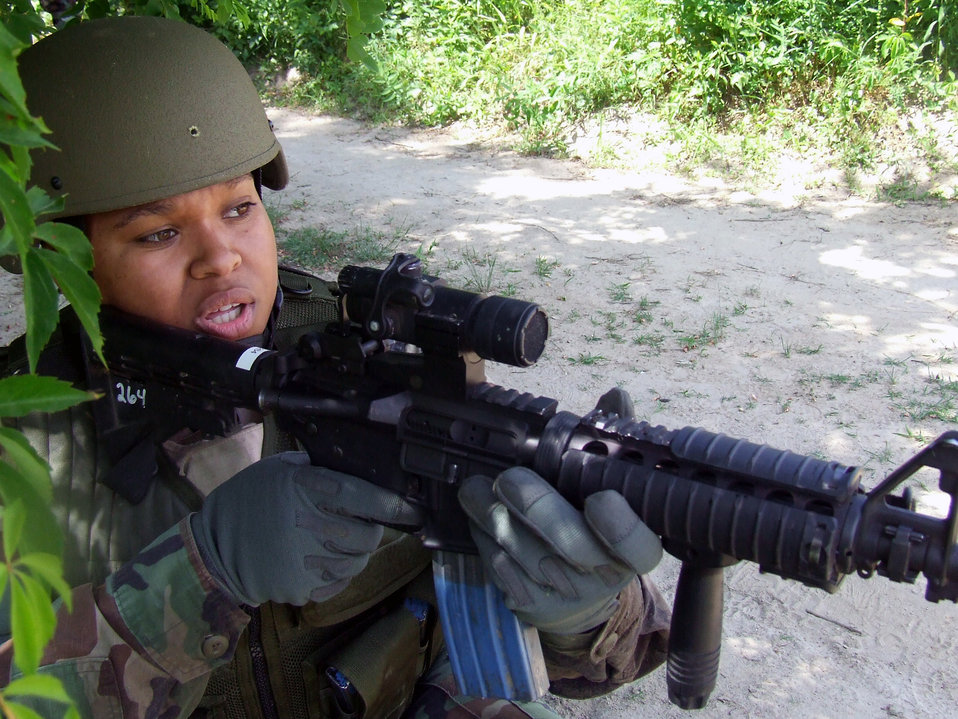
Warriors play

A student in the Air Force Phoenix Warrior Training Course participate in a combat first aid class June 19 at Fort Dix, N.J. The course is taught by the Air Force Expeditionary Center's Expeditionary Operations School and 421st Combat Training Squadron insturctors and prepares security forces Airmen for upcoming deployments.